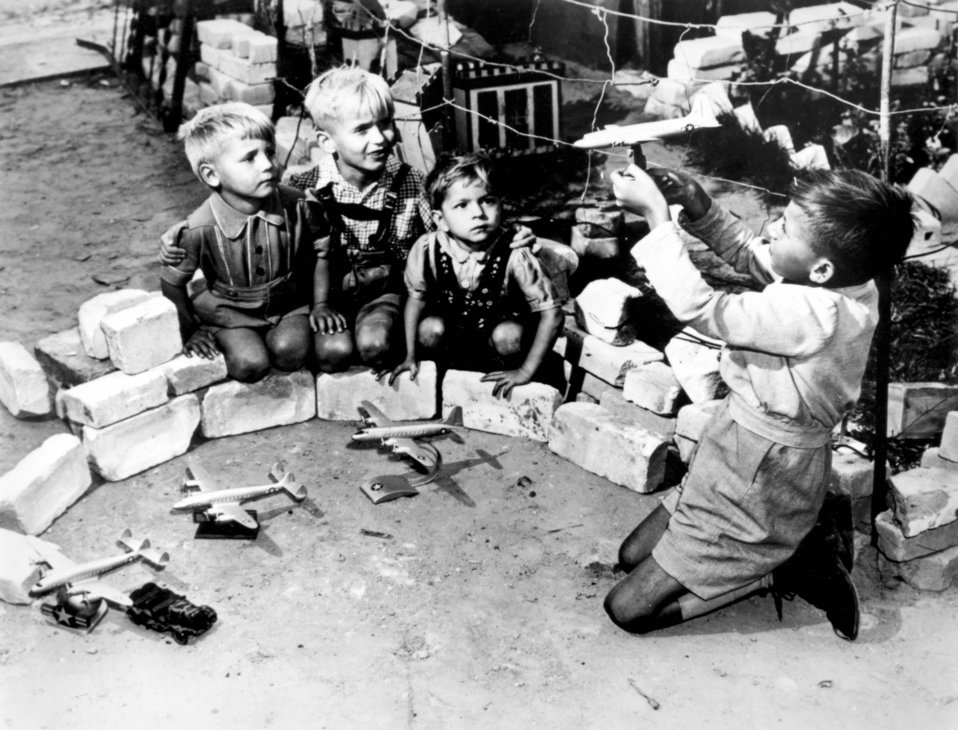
OPERATION VITTLES, and children